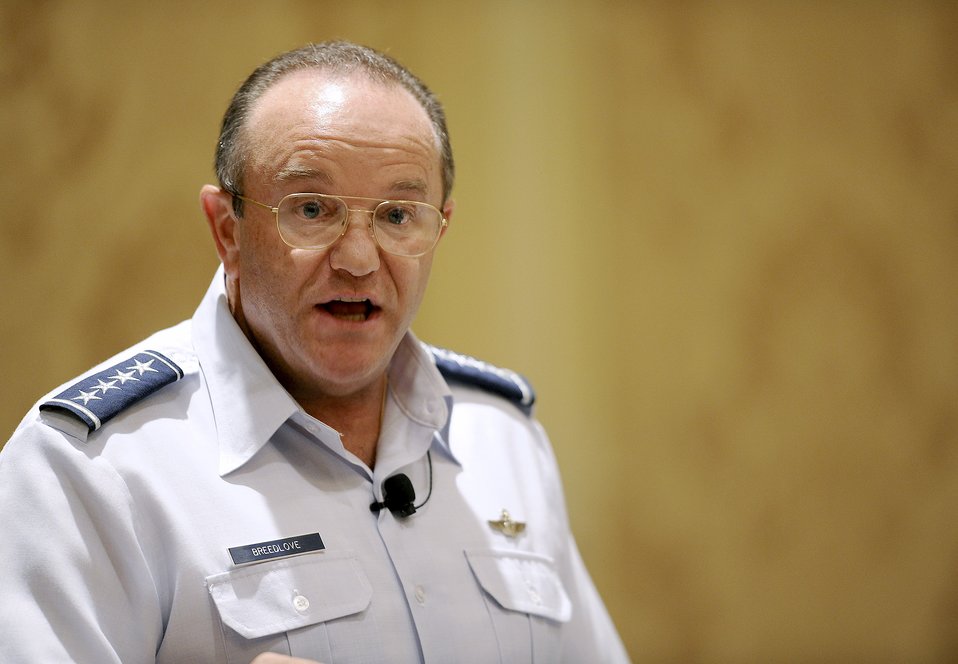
Air Force, Navy team up for 21st Century fight

Air Force Vice Chief of Staff Gen. Phil Breedlove gives a presentation on Air Force future operating concepts and Air-Sea Battle July 20, 2011, in Arlington, Va., at an event hosted by the Air Force Association's Mitchell Institute for Airpower Studies. The general also discussed the importance of the Air Force’s planned Long Range Strike family of systems.